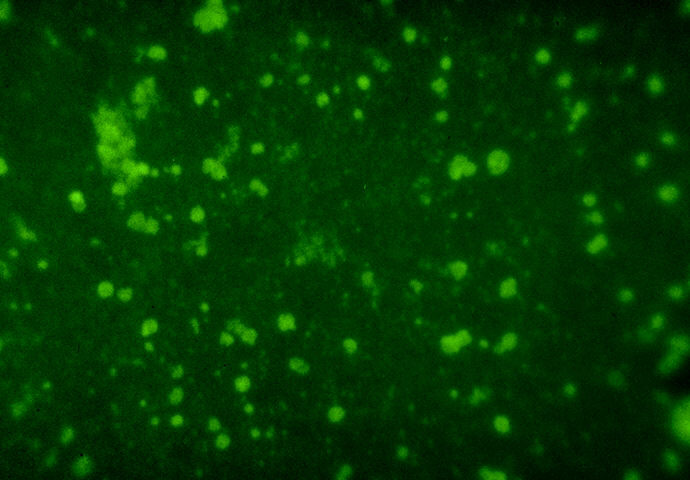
Neisseria meningitidis, group C, in spinal fluid. Penicillin-treated.